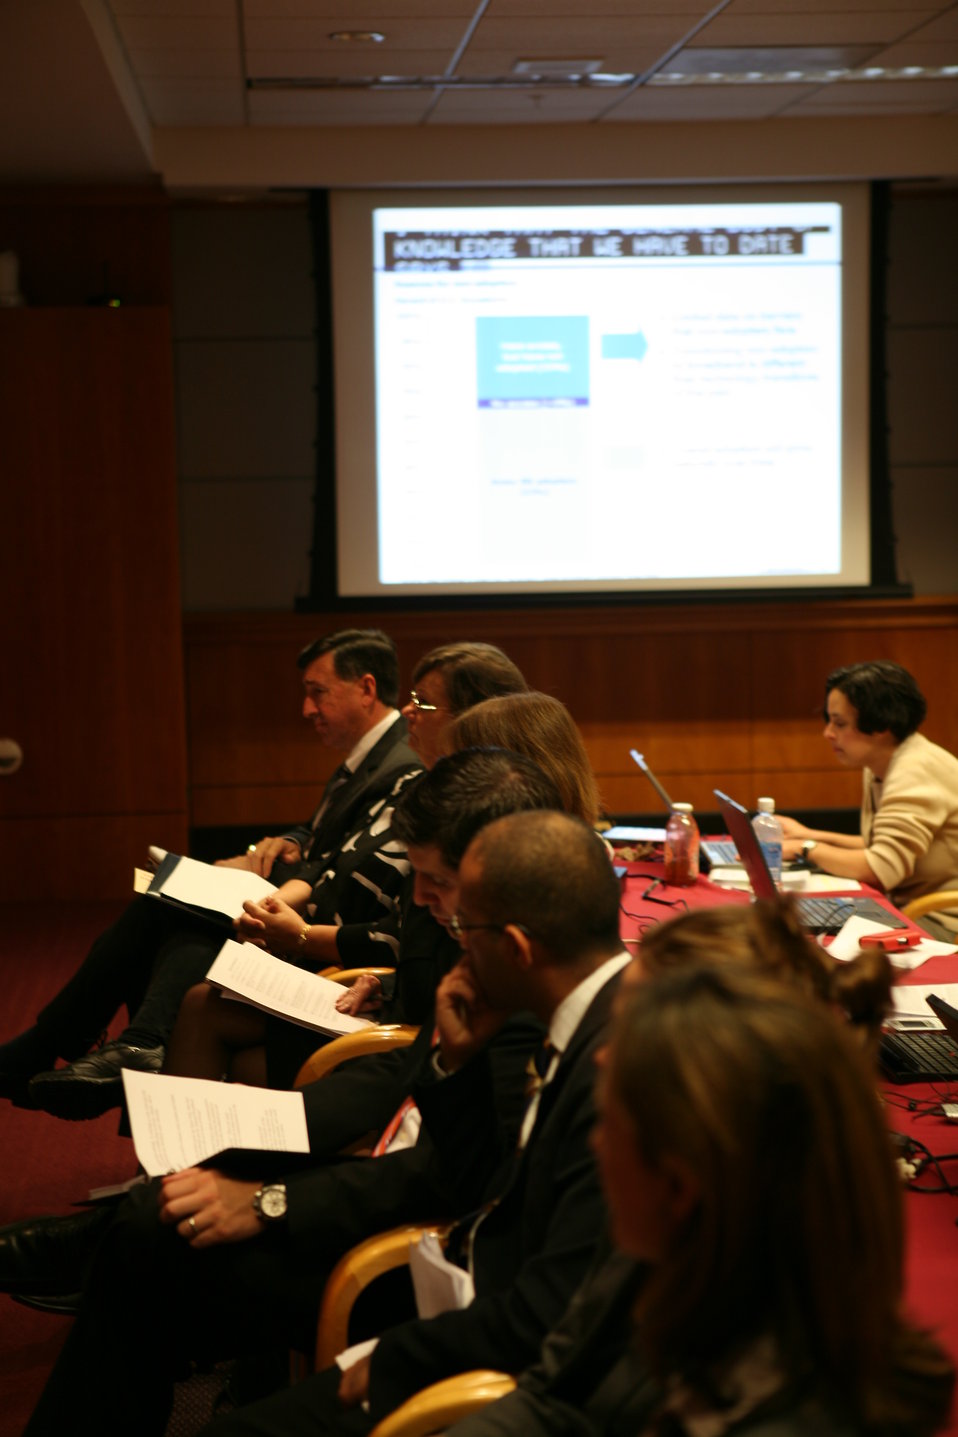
Broadband Midterm Review 9-29-09